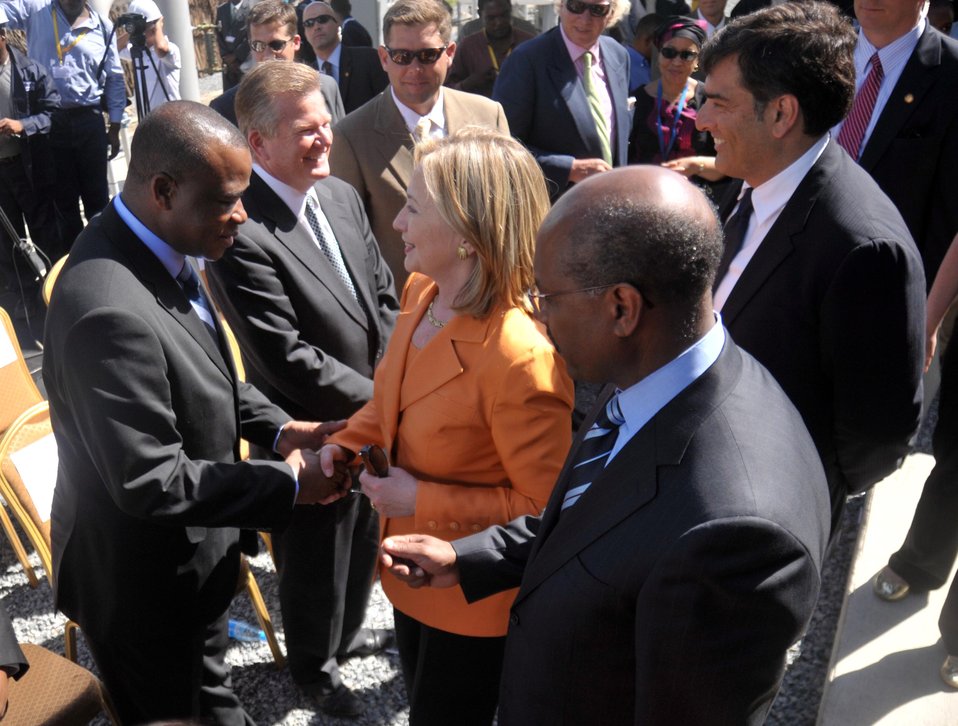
Secretary Clinton Shakes Hands With Tanzanian Energy Minister Ngeleja

U.S. Secretary of State Hillary Rodham Clinton shakes hands with Tanzanian Energy and Minerals Minister William Ngeleja, at the Symbion Power Plant in Dar es Salaam, Tanzania, on June 12, 2011.